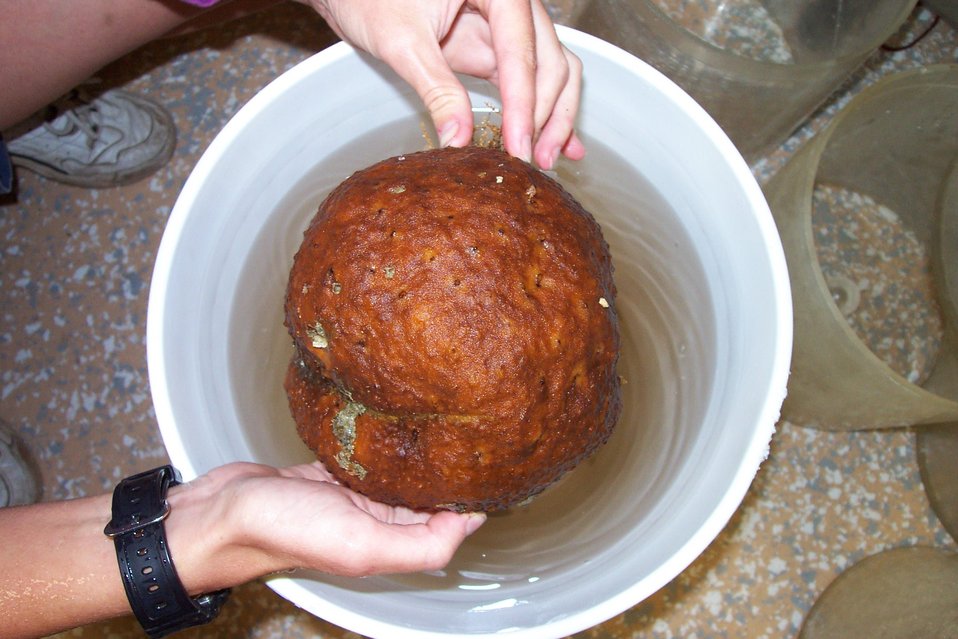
A large softball-sized sponge. Perhaps a melon sponge.